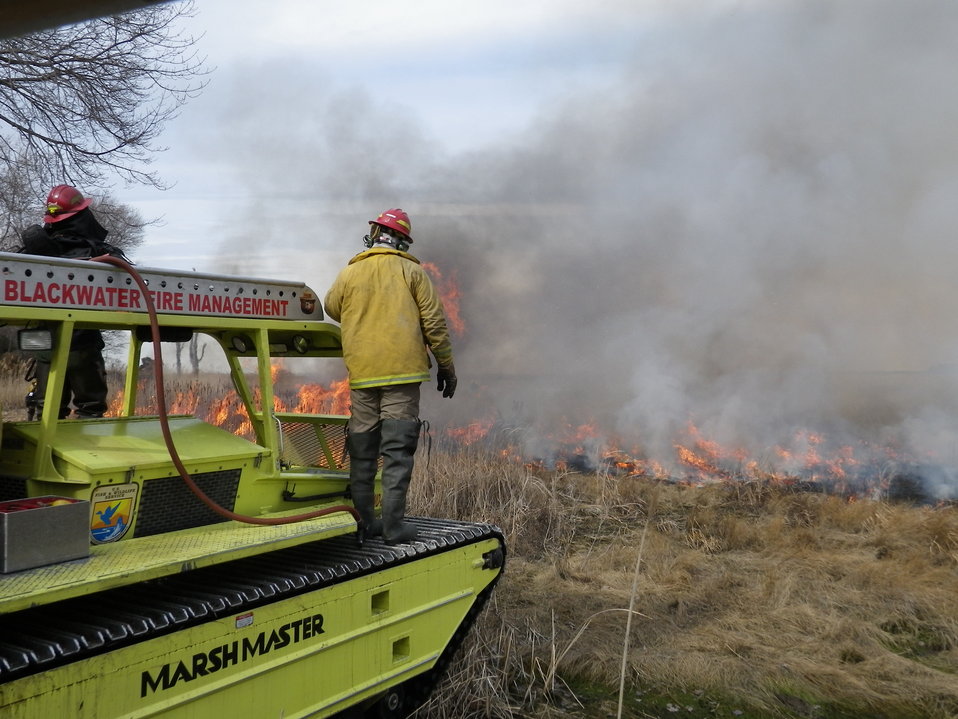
Blackwater Marshmaster at Eastern Neck Wildlife Refuge burn

March, 2011, Eastern Neck National Wildlife Refuge, Maryland: A Marshmaster from Blackwater National Wildlife Refuge helps manage a controlled burn at Eastern Neck National Wildlife Refuge. Both refuges are part of the Chesapeake Marshlands National Wildlife Refuge Complex.